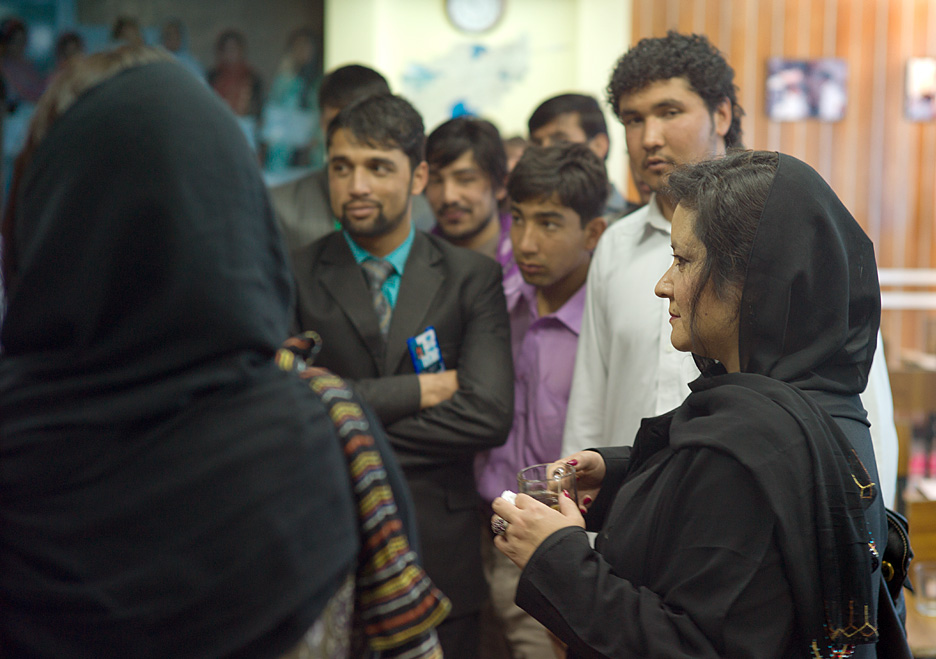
Asta Listening to Students